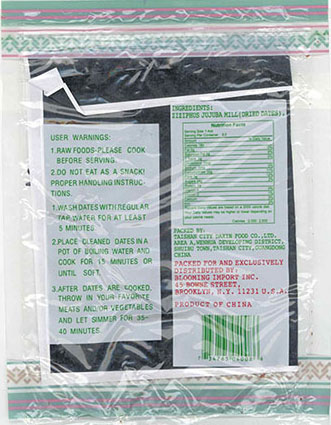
RECALLED – Dried dates

December 11, 2013 – Product Recall – Blooming Import Inc. Issues an Alert on Undeclared Sulfites in Golden Lion Brand Dried Ziziphus Jujuba Mill (Dried Dates).